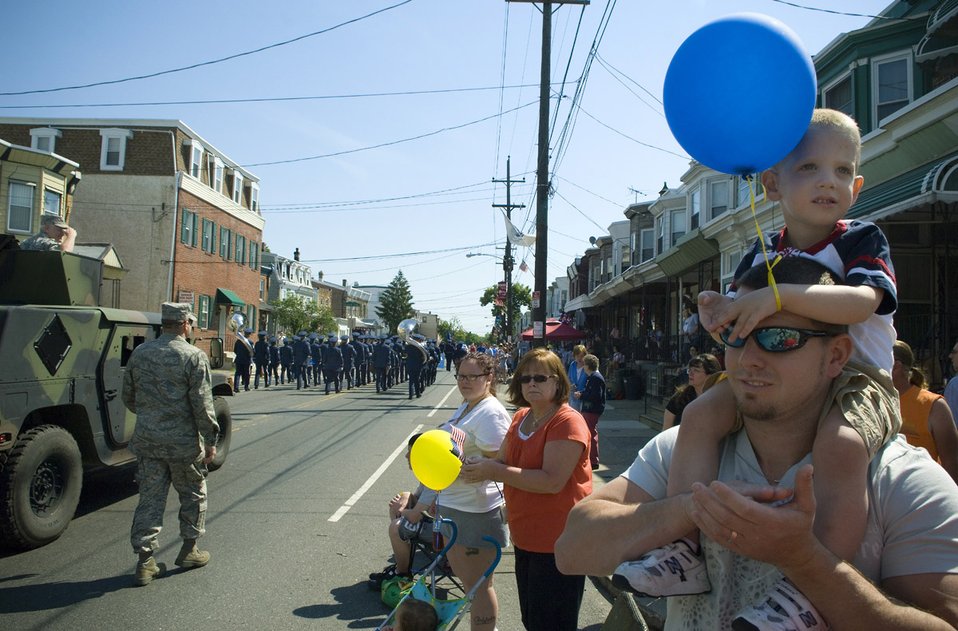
Philly Air Force Week

Larry Rose Jr., 3, sits upon his dad's shoulders watching the Bridesburg Memorial Day Parade May 26. Bridesburg is a borough in Philadelphia and hosted the kickoff celebrations for Air Force Week Philadelphia. The parade featured a fly-by of a KC-135 Stratotanker and a KC-10 Extender and a performance by the U.S. Air Force Heritage of America Band. Air Force Week Philadelphia is an event designed to build new relationships in the Philadelphia metropolitan area and strengthen public support for the Air Force mission and Airmen serving worldwide in the war on terrorism.